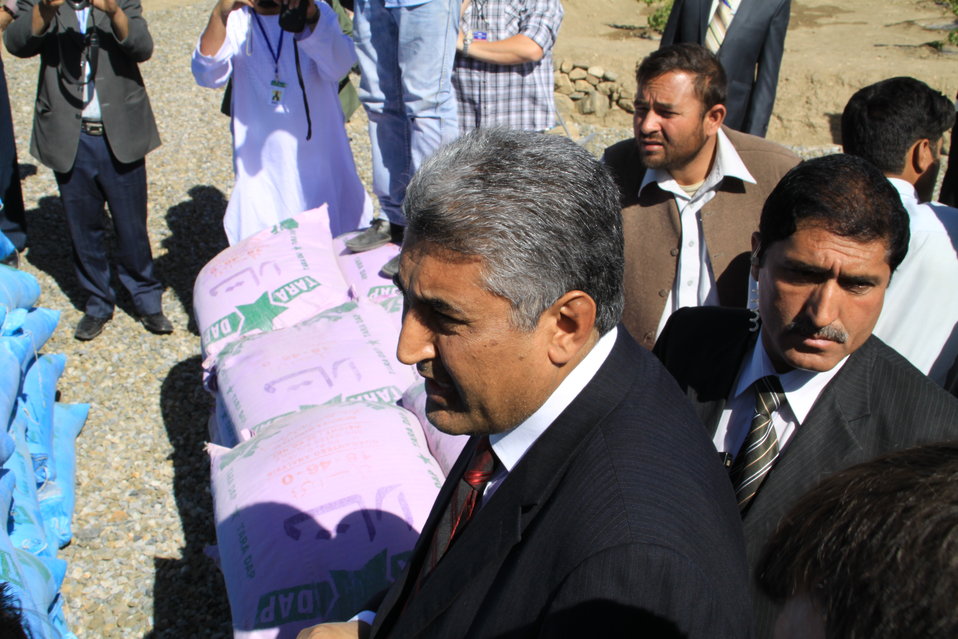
AVIPA Plus Wheat Seed Distribution 101005

US Ambassador Karl Eikenberry and USAID Acting Mission Director Kevin Brownawell joined the Minister of Agriculture, Irrigation and Livestock, H.E. Minister Mohammed Rahimi in signing a Memorandum of Understanding and distributing vouchers to area farmers for wheat and fertilizer.

US Ambassador Karl Eikenberry and USAID Acting Mission Director Kevin Brownawell joined the Minister of Agriculture, Irrigation and Livestock, H.E. Minister Mohammed Rahimi in signing a Memorandum of Understanding and distributing vouchers to area farmers for wheat and fertilizer.